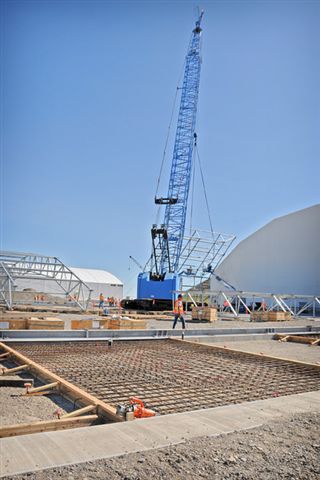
RAN ARP RWMC S123 ARPVI STEELERECTION 070610 P6558-005 A